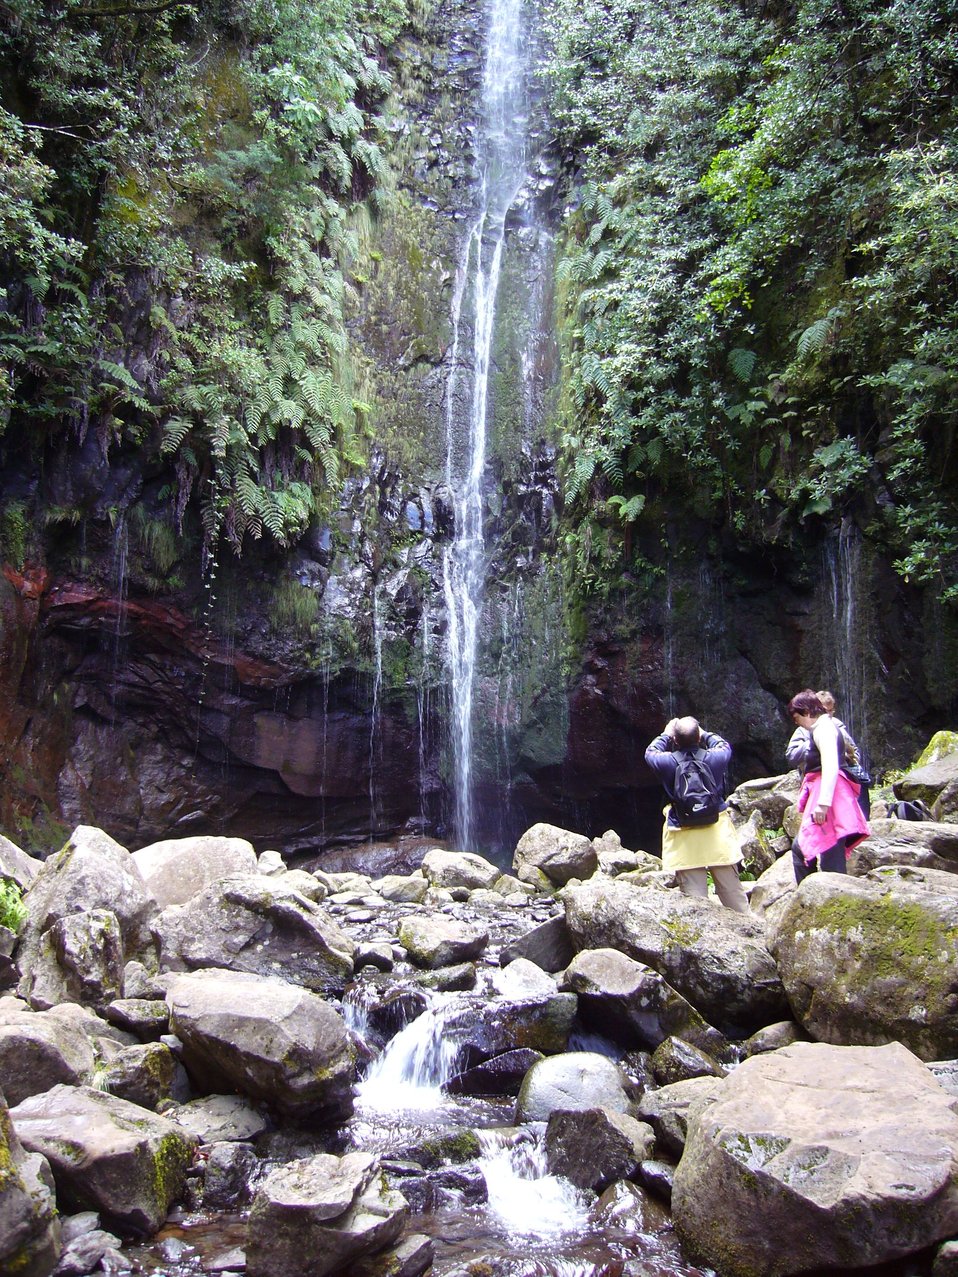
Čeština: vodopád 25 fontes-Rabaçal